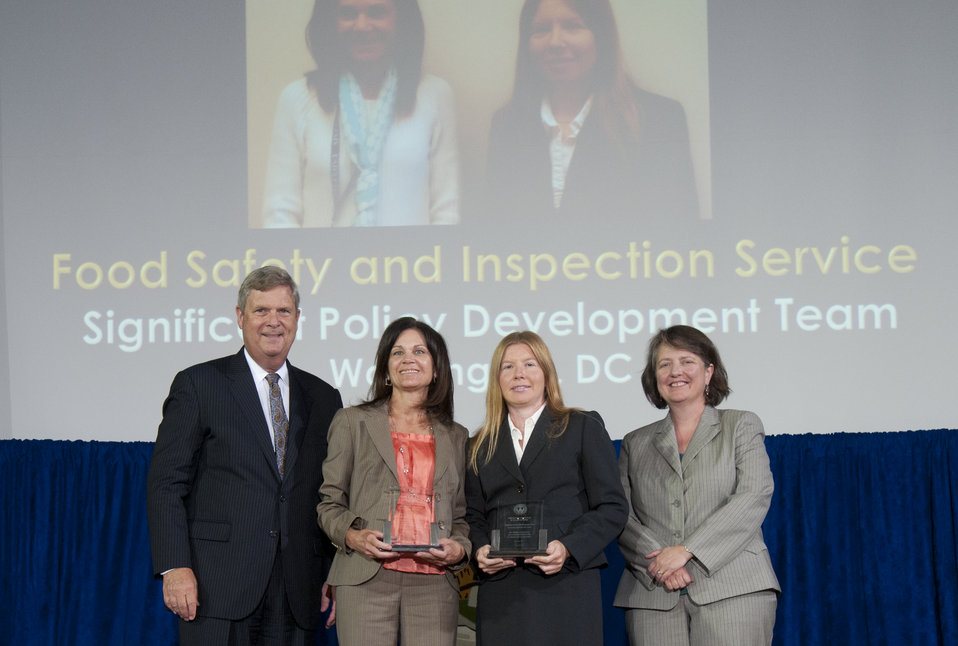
Agriculture Secretary Tom Vilsack and Agriculture Deputy Secretary Kathleen Merrigan present the Secretary’s Honor Award to Significant Policy Development Team Food Safety and Inspection Service (FSIS) group leaders Mary Porretta and April Regonlinski at the U.S. Department of Agriculture (USDA) 64th Annual Honor Awards Ceremony in Washington, D.C. on Wednesday, Sept. 12, 2012. The Significant Policy Development Team provided outstanding work developing and implementing significant new policies that will reduce pathogens in product, strengthen local and regional food systems, and increase available nutrition information.